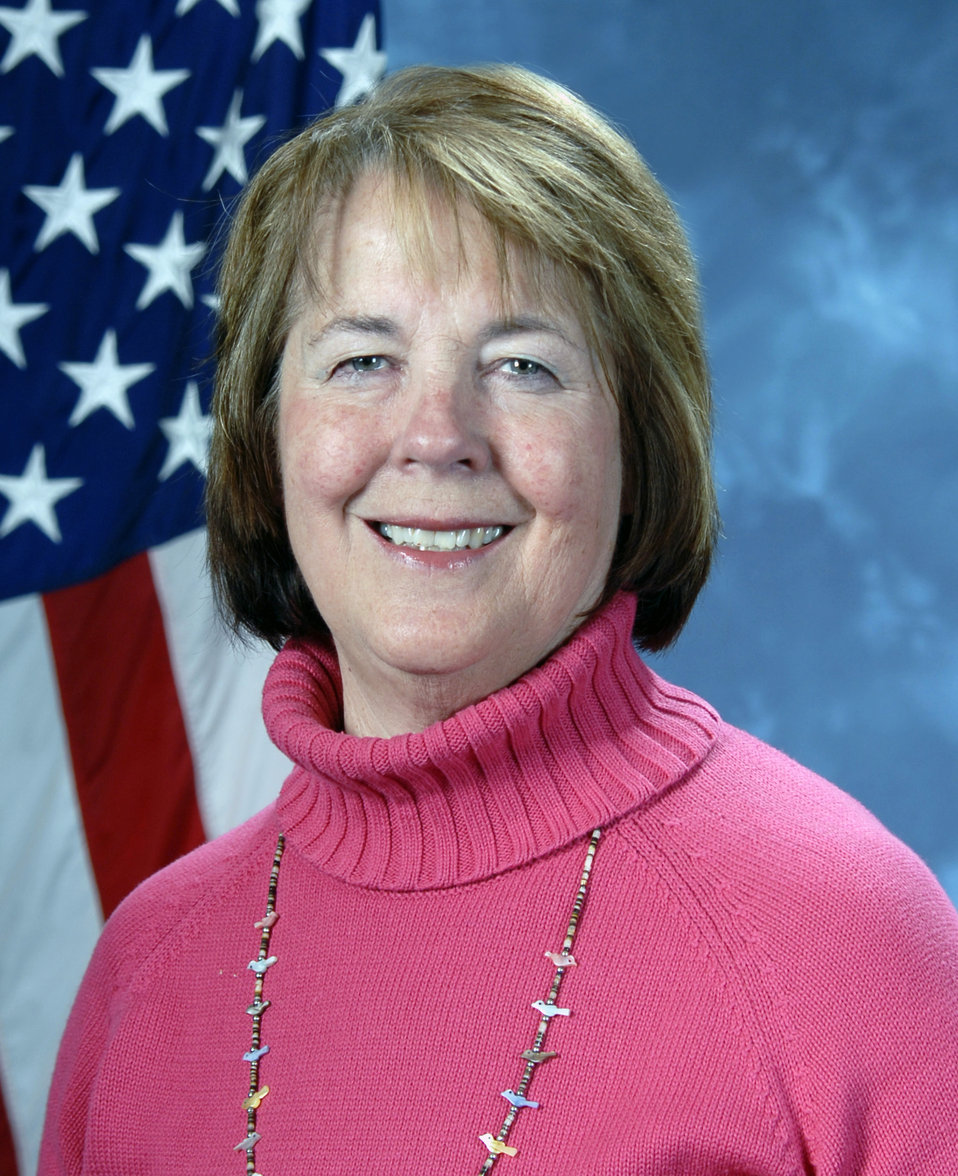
Academy instructor named Colo. professor of year PB

Dr. Frances Pilch was named the Colorado Professor of the Year Nov. 18, 2010, by the Council for Advancement and Support of Education. Dr. Pilch is a professor and deputy department head for the Air Force Academy's Department of Political Science.